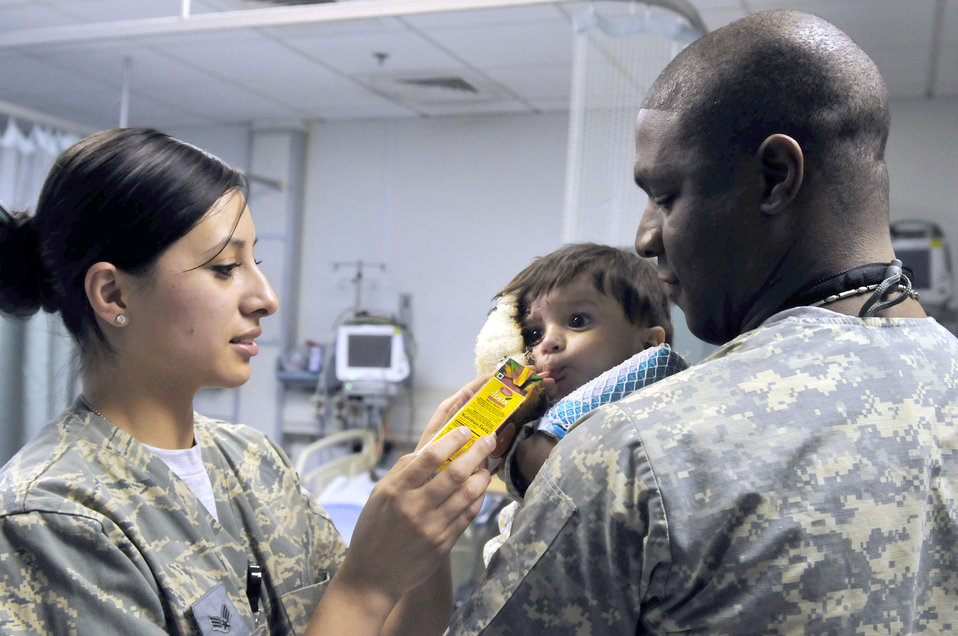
Family treated at CJTH

Senior Airmen Mabel Aguirre and Staff Sgt. Dequijamin Roberson tend to Ajamal Hazrat Jan. 9, 2011. Ajamal was a patient at the Craig Joint Theater Hospital at Bagram Airfield, Afghanistan. He and several members of his family were badly injured after a propane tank used to heat their home exploded. Airman Aguirre and Sergeant Roberson are medical technicians assigned to the 455th Expeditionary Medical Operation Squadron.